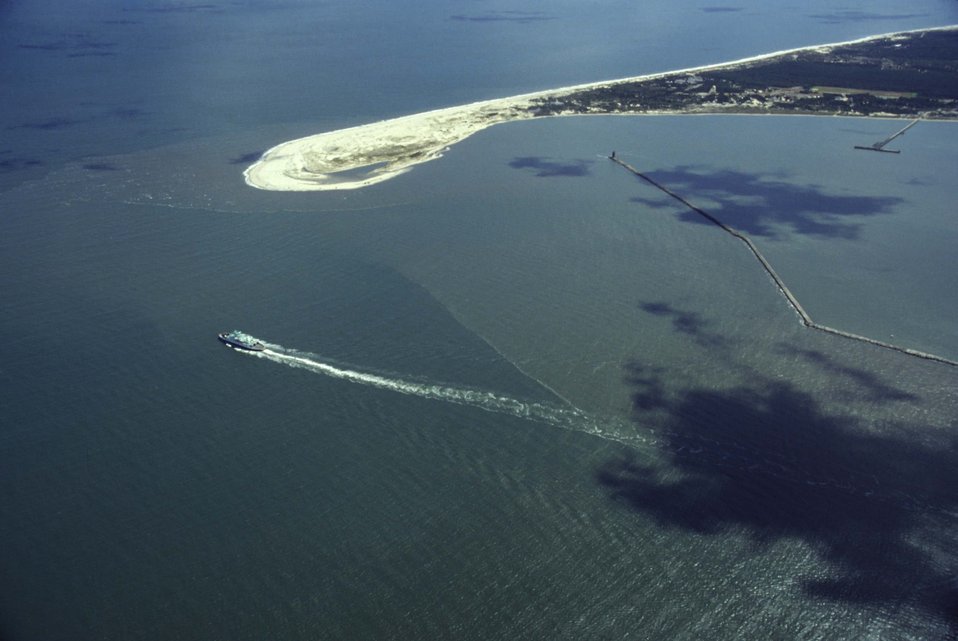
Cape Henlopen, Cape May, NJ